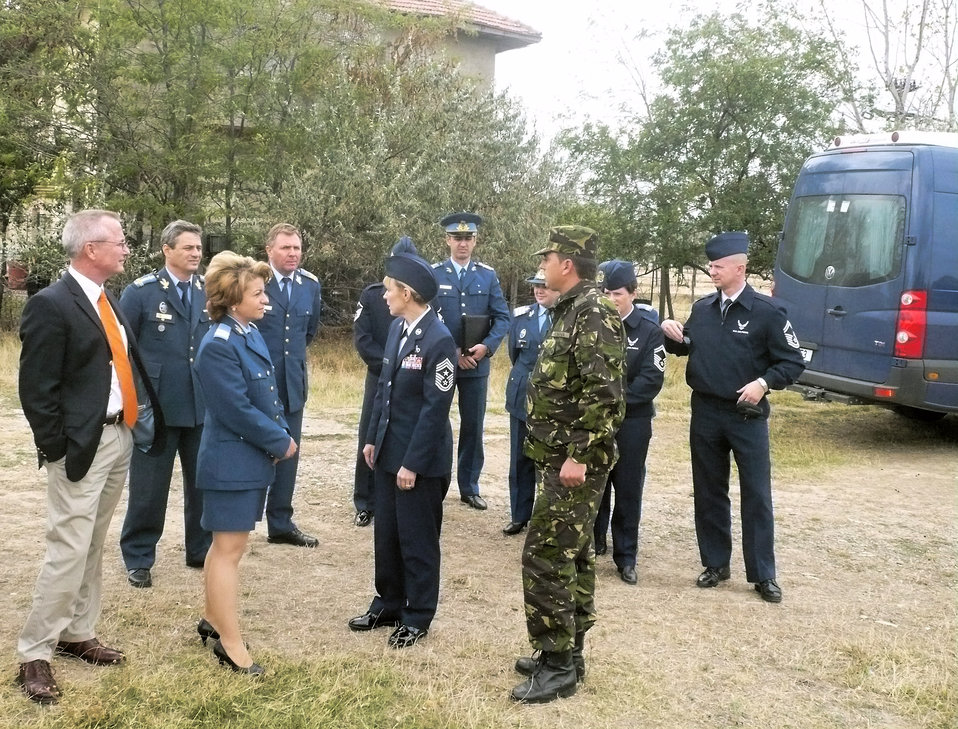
USAFE Airmen exchange ideas with Romanian counterparts

Chief Master Sgt. Pamela Derrow, United States Air Forces in Europe command chief, (center) and three other senior noncommissioned officers from Ramstein Air Base, Germany, visit with Romanian air force senior enlisted leaders at the Boboc Training Center, Romania, Sept. 22-27 as part of an ongoing USAFE theater security cooperation engagement. The senior NCOs familiarized themselves with Romanian enlisted development, education and technical training, and senior NCO and NCO academy organizational structure, roles and mission.